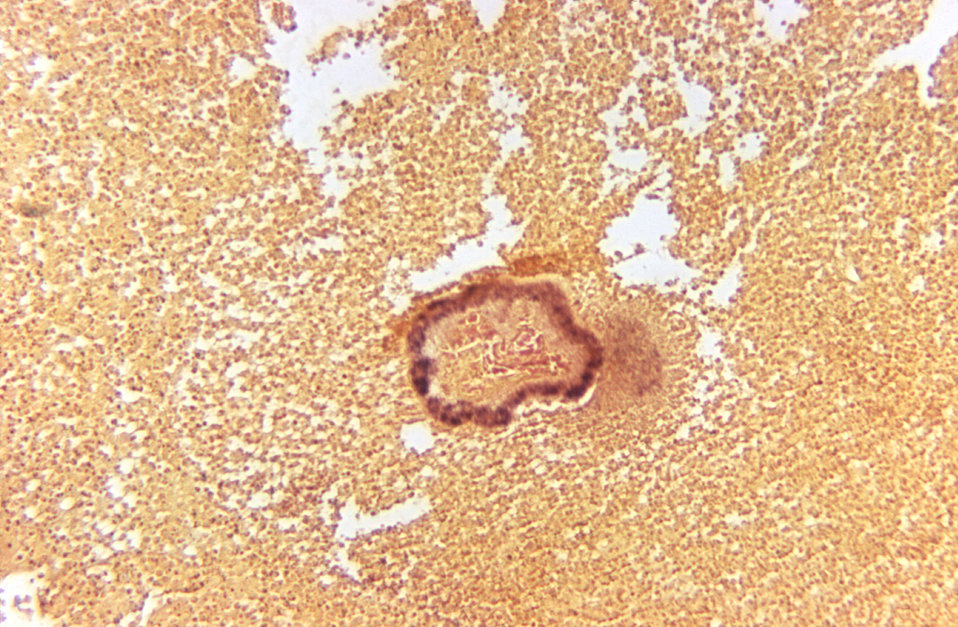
Prepared using the Brown and Brenn method of staining, and under a magnification of 125X, this photomicrograph reveals histopathologic changes indicative of the presence of the Gram-positive, rod-shaped bacteria, Arachnia propionica.